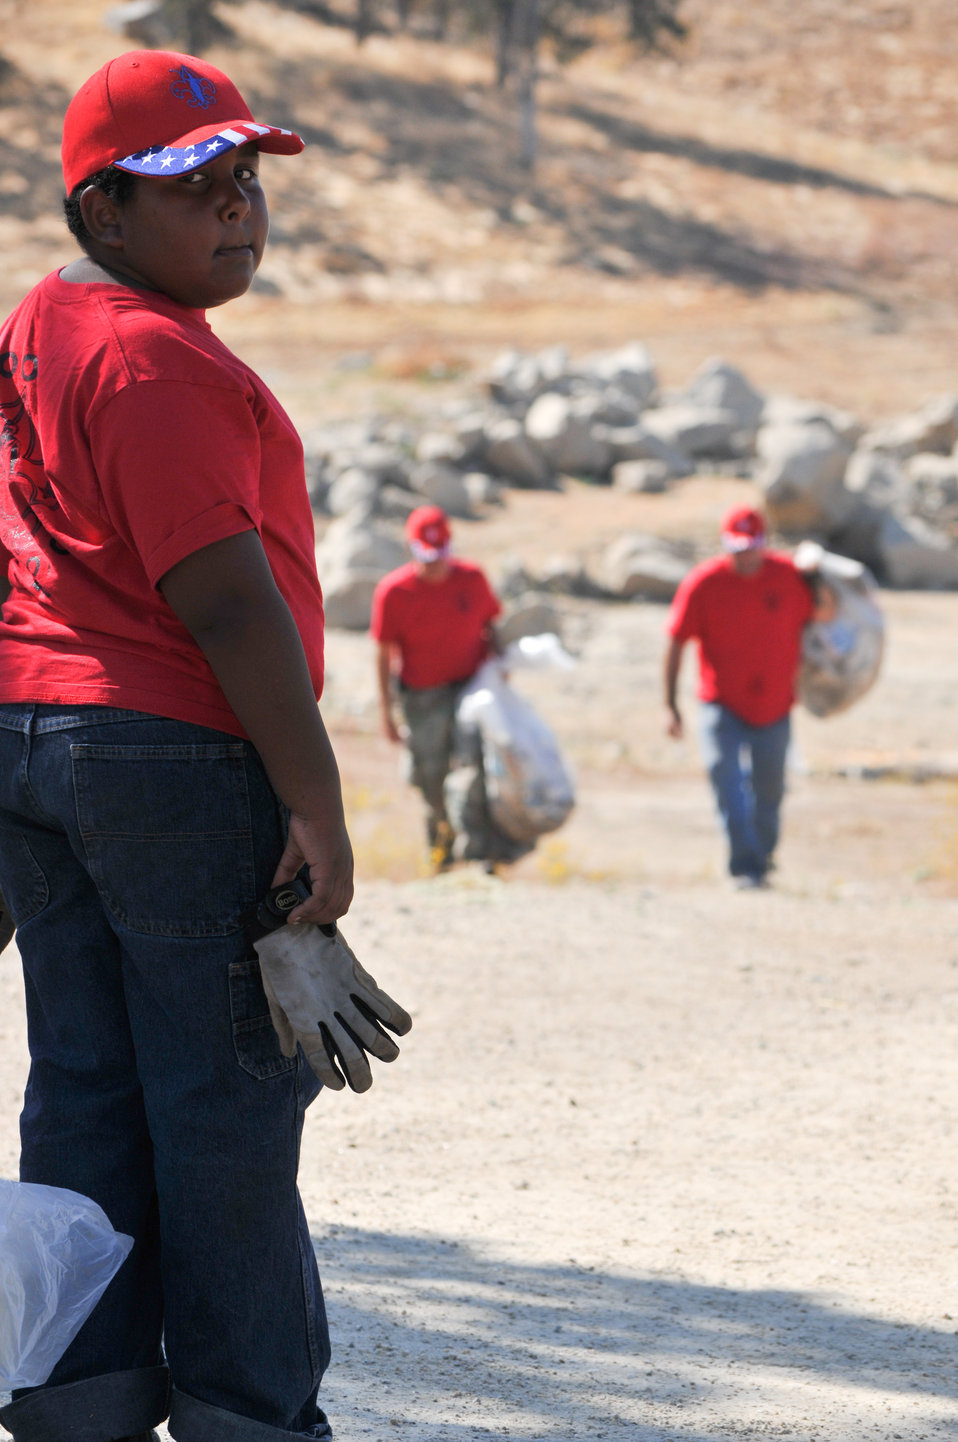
HENSLEY LAKE, Calif. (Sept. 25, 2010) – Volunteers collect litter here Sept. 25, taking part in the park’s National Public Lands Day observance. More than 110 volunteers helped Hensley staff remove litter, repair trail erosion, clean the swimming beach and paint and clean signs throughout the park.